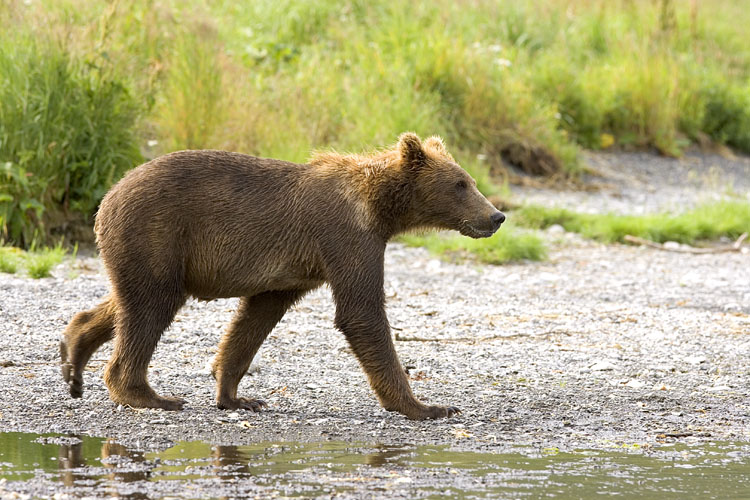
Wildlife of Kodiak Refuge